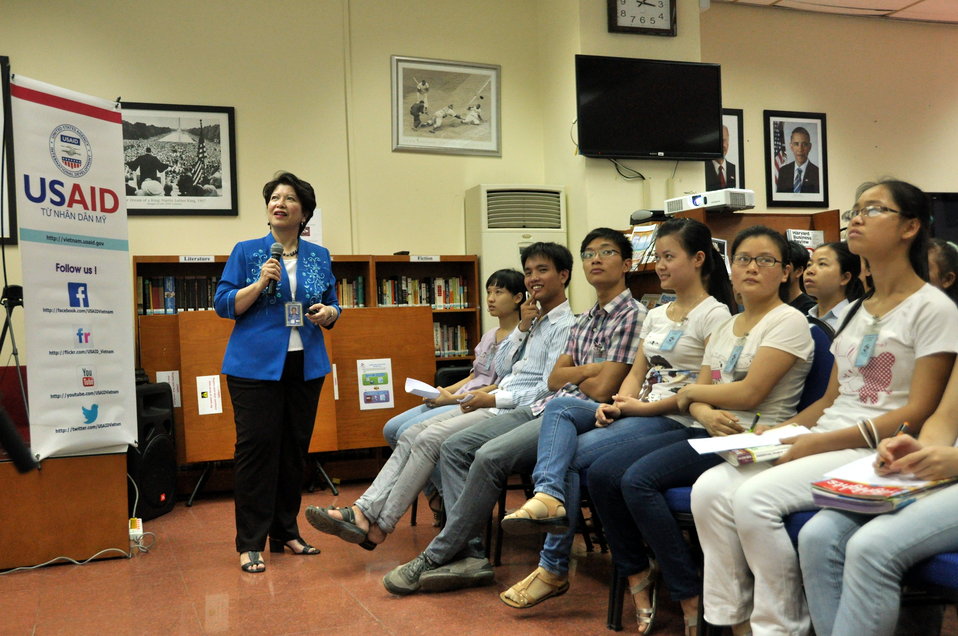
Climate Change Talk at the American Center

Hanoi, May 28, 2013.